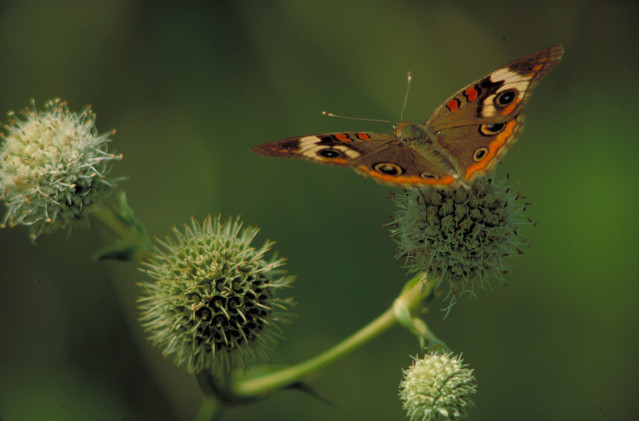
common buckeye on rattlesnake master